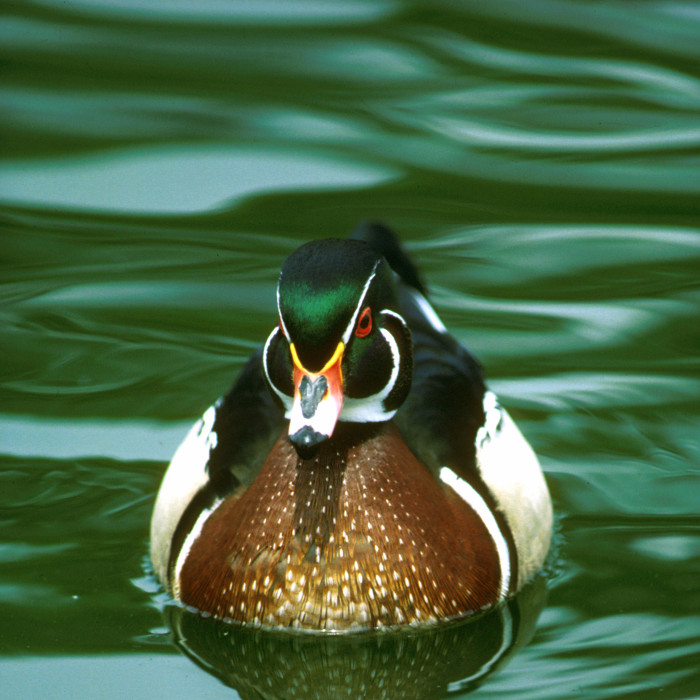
wood duck

Usfws